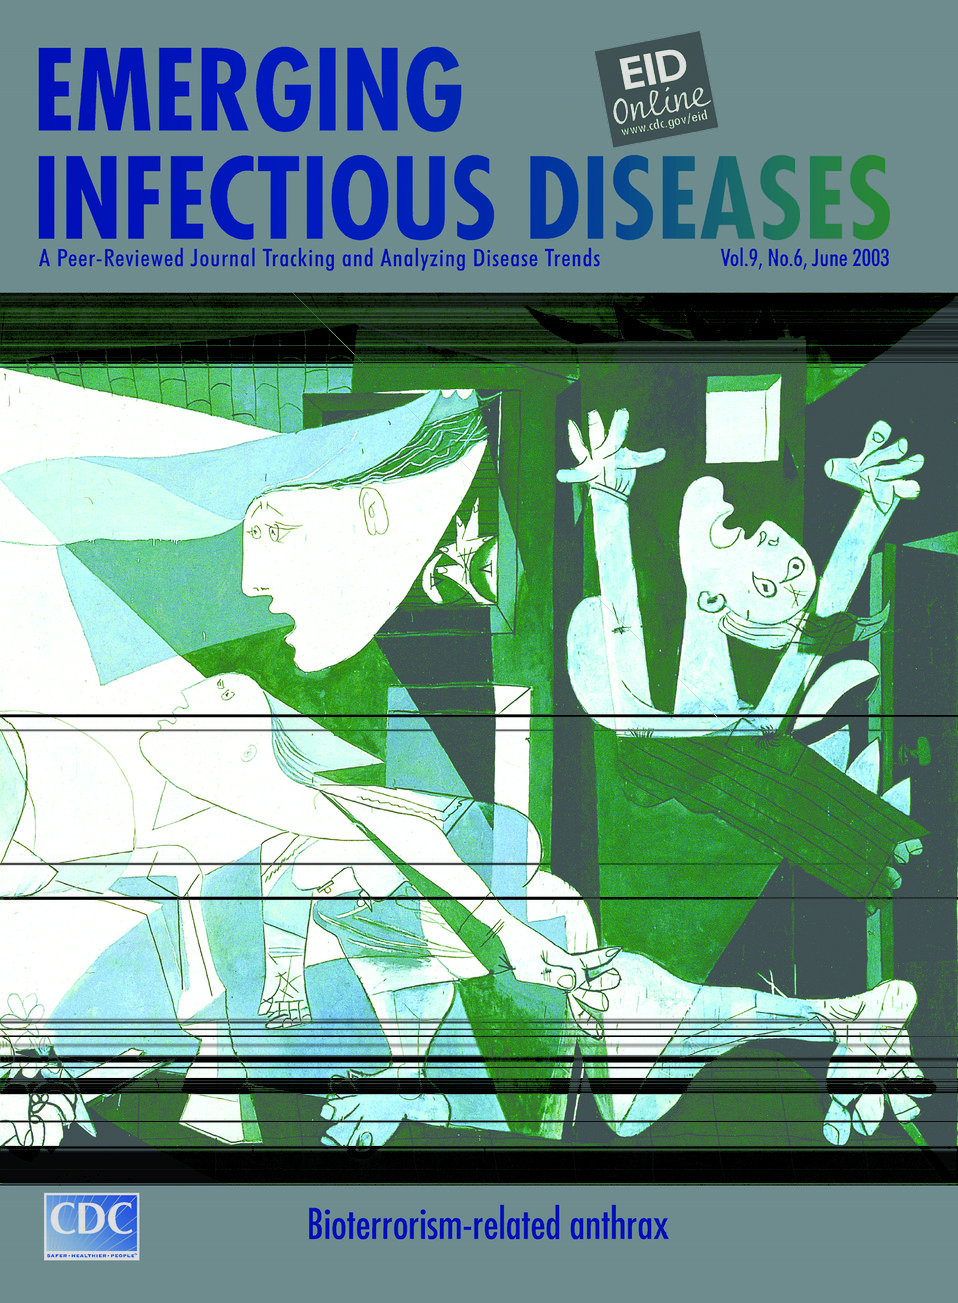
Emerging Infectious Diseases (EID) cover artwork for Volume 9, Number 6, June 2003 issue.